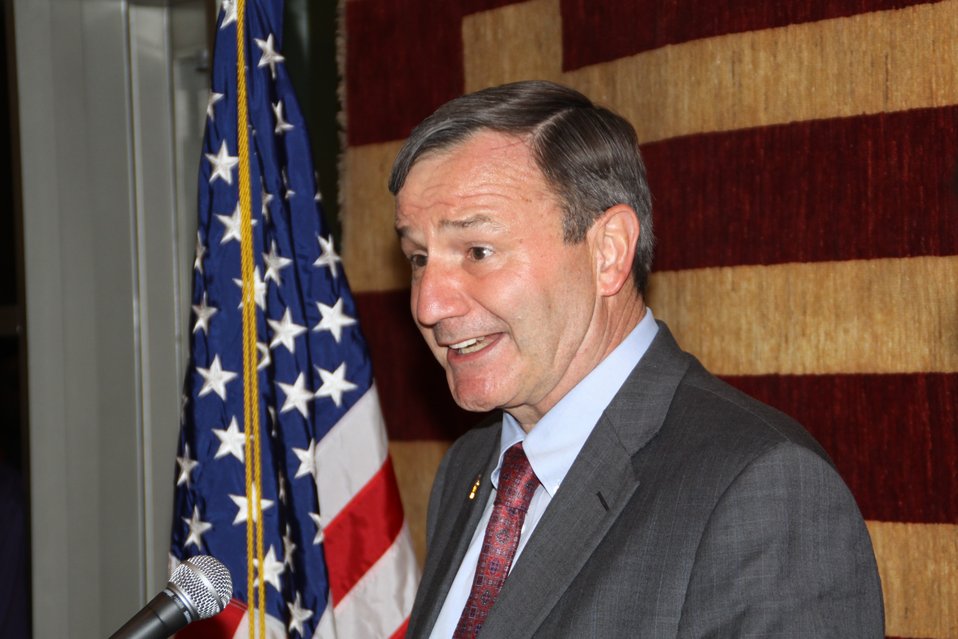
US Embassy Town Hall July 21, 2010